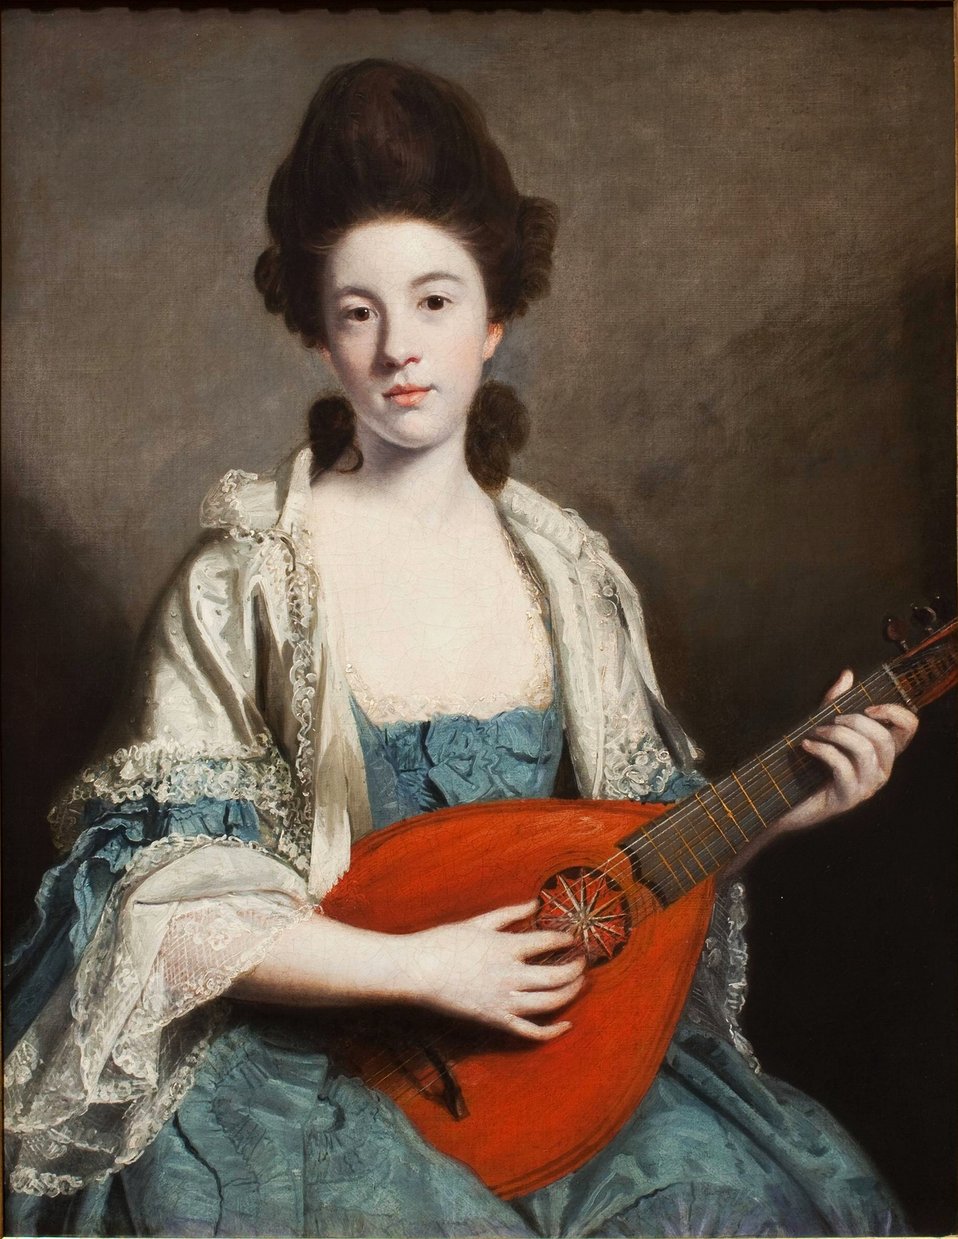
Sir Joshua Reynolds - Portrait of Mrs. Froude